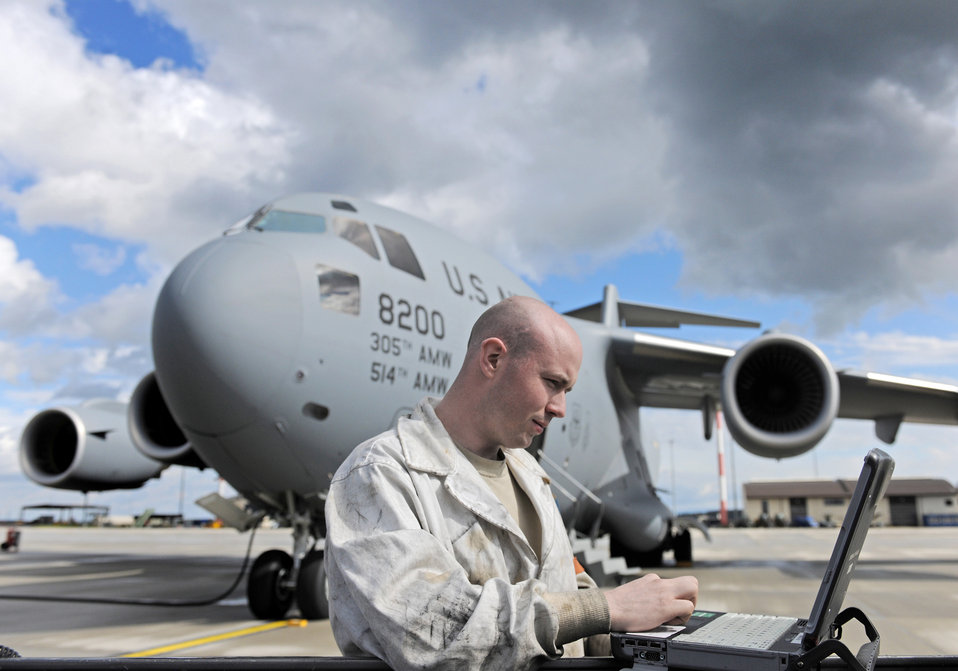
Preflight inspections

Staff Sgt. Sean Durkin reviews a technical order prior to inspecting the engines of a C-17 Globemaster III April 12, 2011, at Spangdahlem Air Base, Germany. Sergeant Durkin is an aircraft hydraulics journeyman assigned to the726th Air Mobility Squadron.